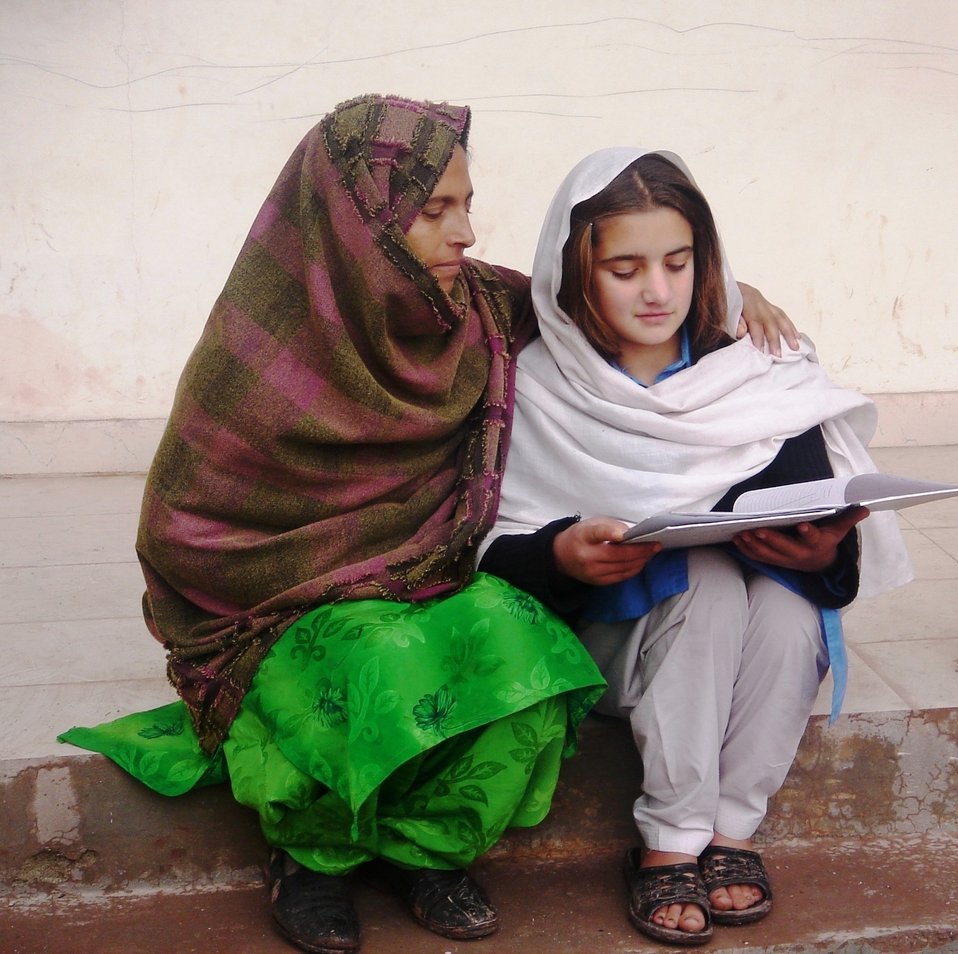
Reading 05